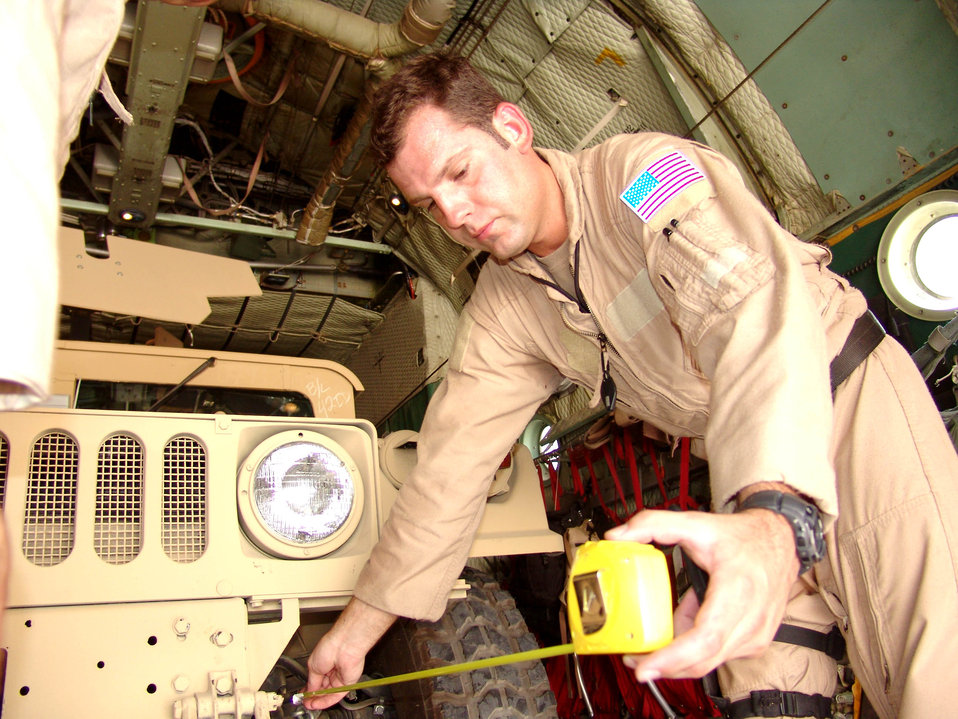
Humvee delivery

SOUTHWEST ASIA -- Staff Sgt. Joseph Stuart measures the distance between two armored Humvees being loaded onto a C-130 Hercules headed for U.S. ground forces in Iraq. Sergeant Stuart is a loadmaster with the 737th Expeditionary Airlift Squadron at a forward-deployed location and is from Pope Air Force Base, N.C.